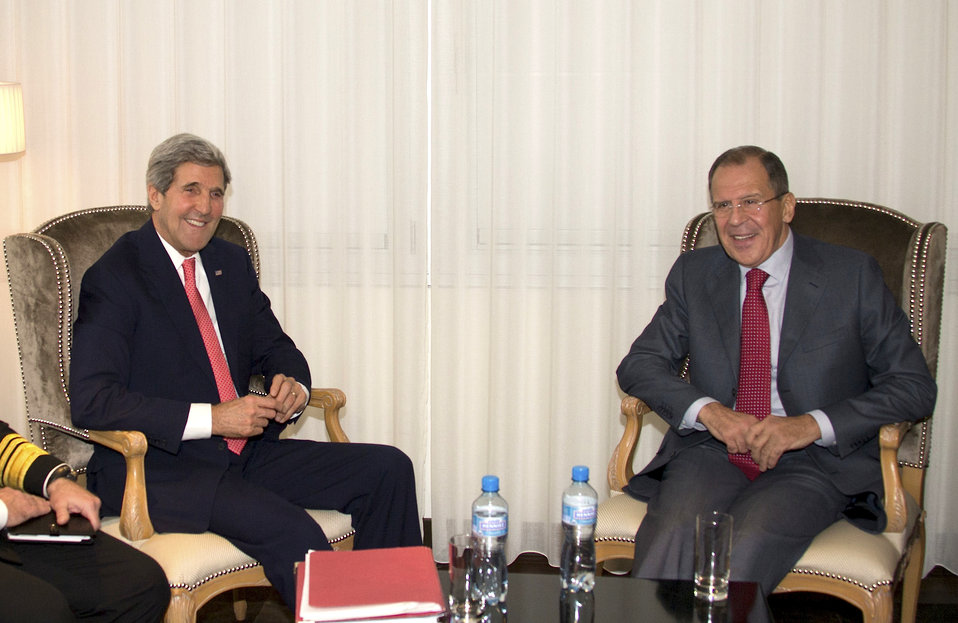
Secretary Kerry Meets With Russian Foreign Minister Lavrov in Geneva

U.S. Secretary of State John Kerry meets with Russian Foreign Minister Sergey Lavrov on the margins of talks focused on Iran's nuclear capabilities, Geneva, Switzerland, November 23, 2013.